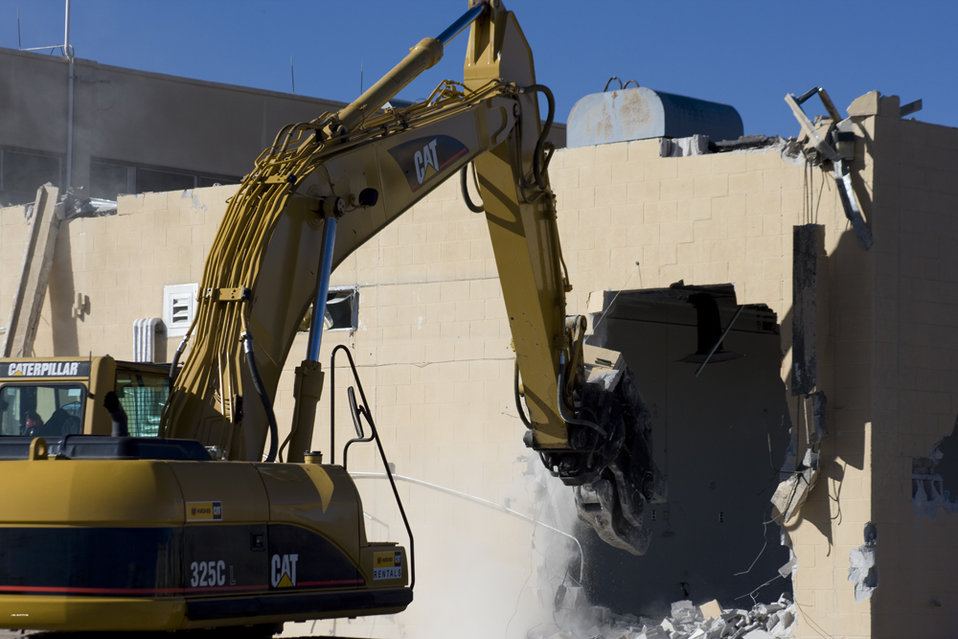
Building Demolition at Los Alamos National Laboratory Technical Area 21